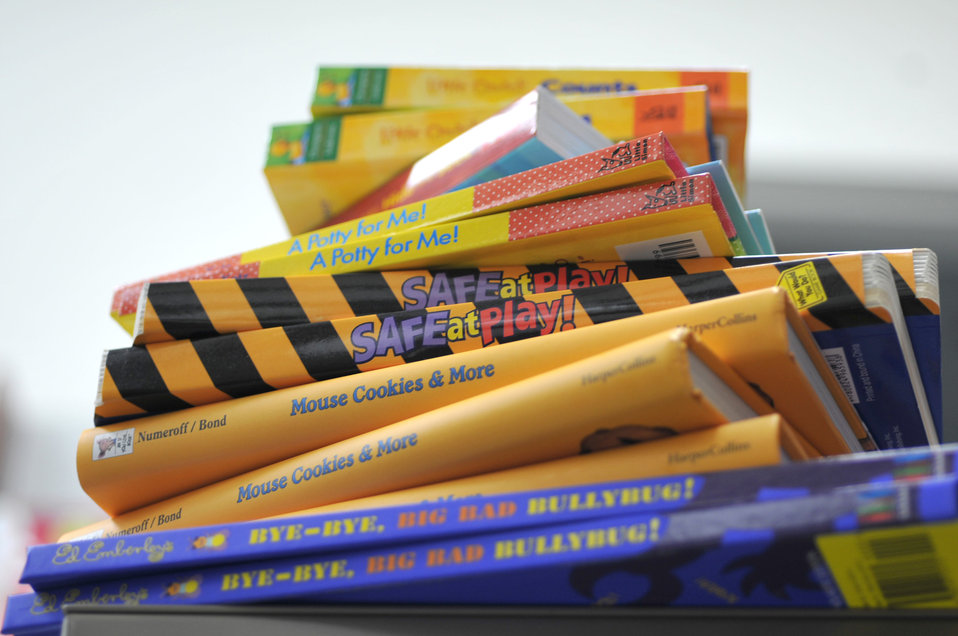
Reach Out and Read

A stack of books sits on a supply shelf April 27, 2011, at the 374th Medical Operations Squadron Pediatric Clinic at Yokota Air Base, Japan. The books were donated by the Reach Out and Read Program, headquartered in Boston, to promote early literacy, childhood developement and improved listening and hearing skills in children.